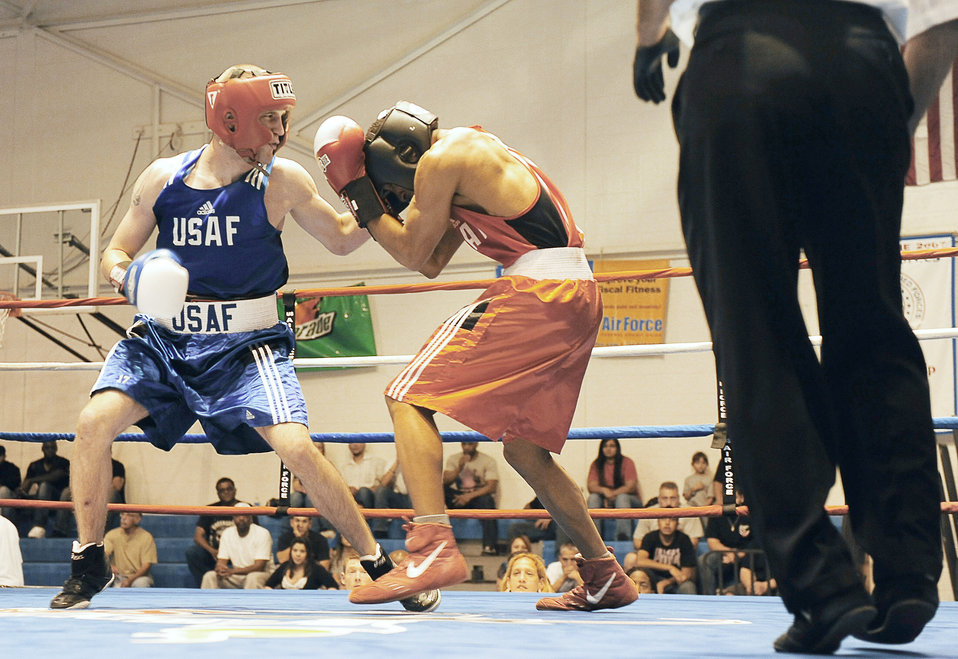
Contenders box for a spot

Senior Airman Matt McCoy throws an uppercut against his opponent during the Air Force Boxing Championships at the Bennett Fitness Center at Lackland Air Force Base, Texas, April 3, 2010. Airmen competing for a spot on the Air Force boxing team demonstrated their talents in front of a live audience.